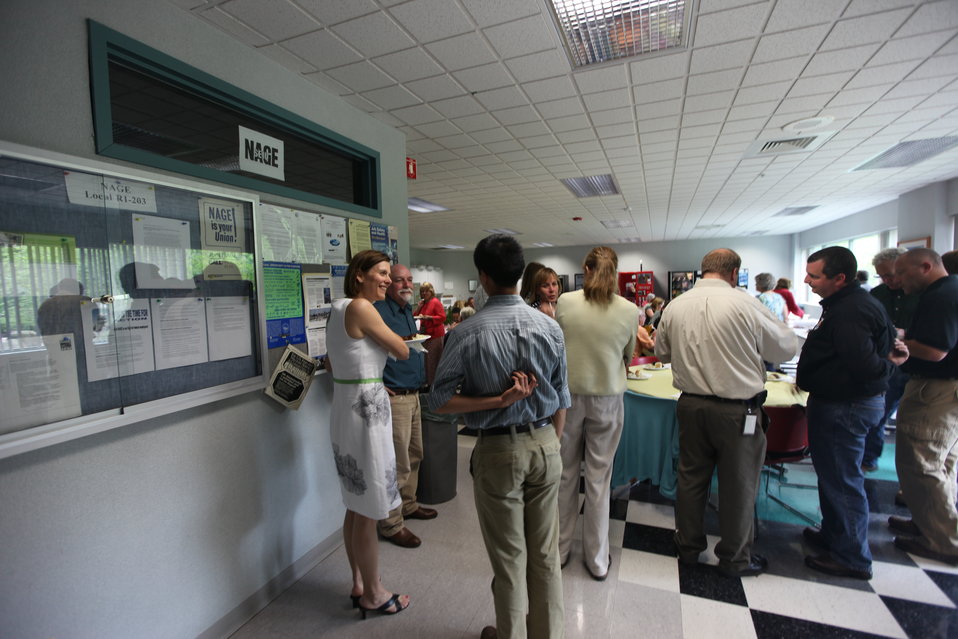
Northeast Region Employee Appreciation Awards

Luncheon